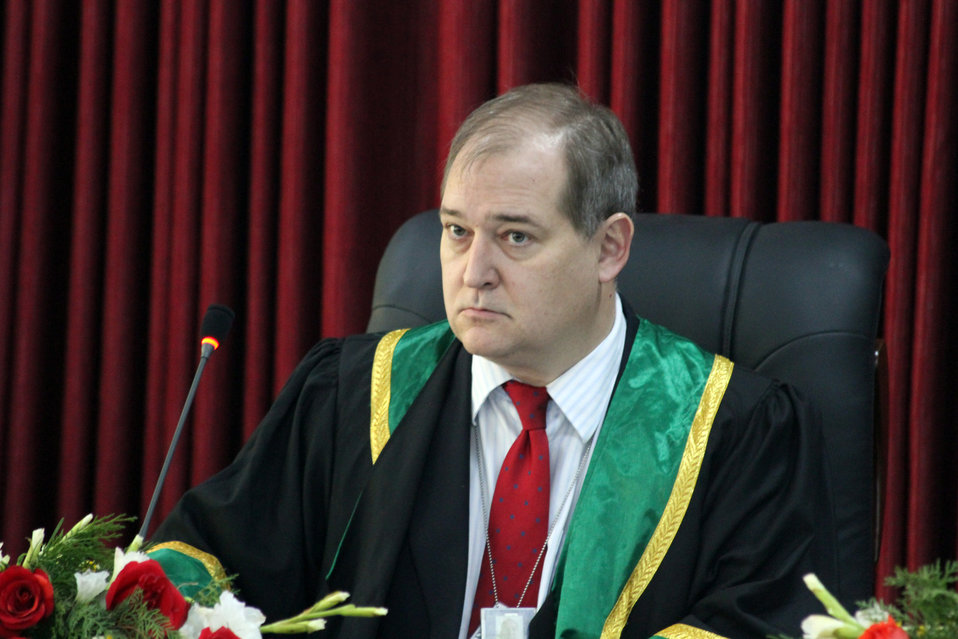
Afghanistan Final National Round of the 2013 Philip C.Jessup International Law Moot Court Competition